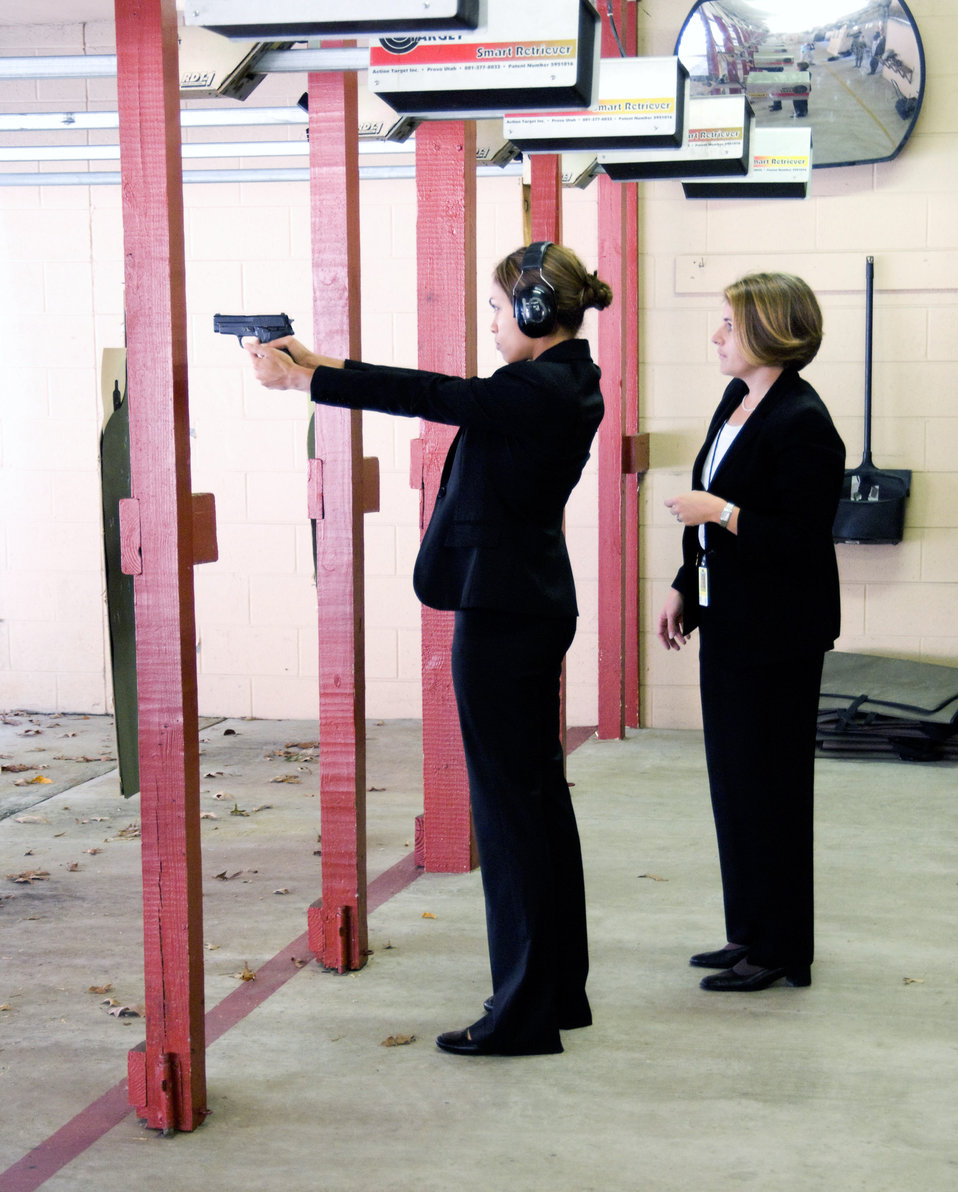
Air Force provides support in new Hollywood movie

Rosario Dawson prepares to fire a M11 pistol under the watchful eye of Special Agent Rachel Ouellette at the firing range at Andrews Air Force Base, Md. Ms. Dawson was at the base researching her role as a Special Agent with the Air Force Office of Special Investigations in the movie